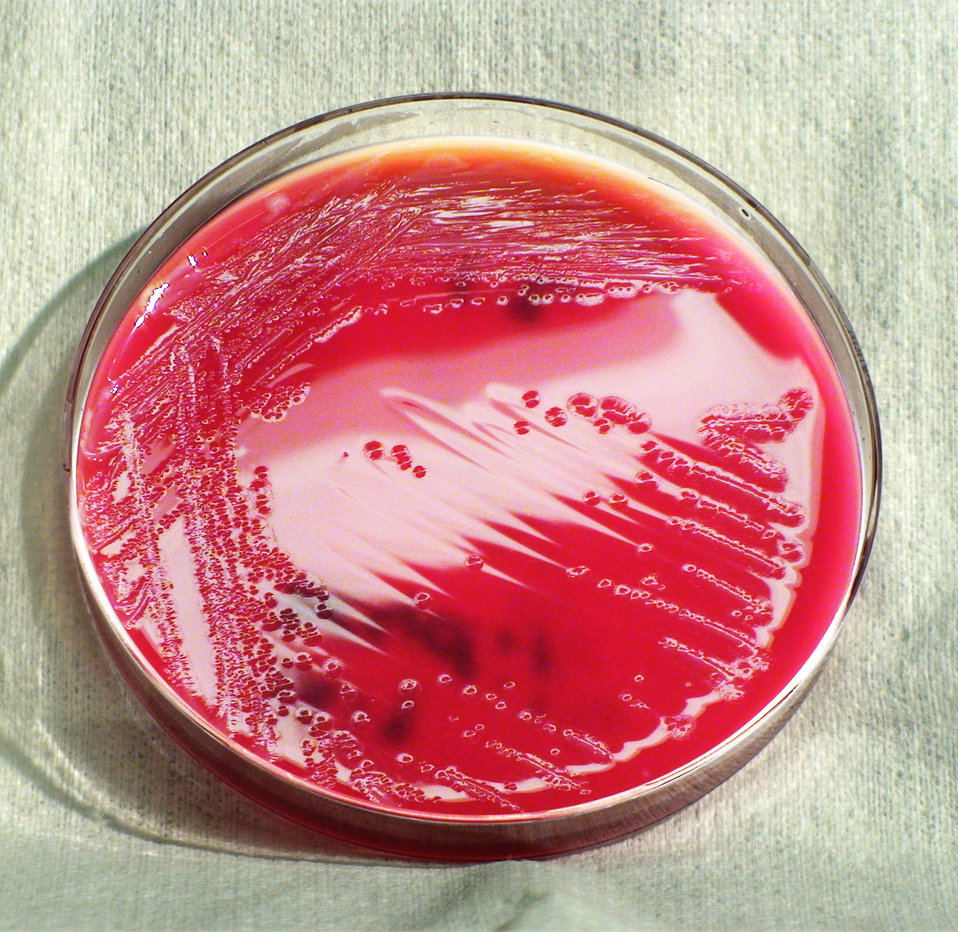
This photograph depicts the colonial morphology displayed by Gram-negative Shigella boydii bacteria, which was grown on a medium of sheep's blood agar (SBA), for a 24 hour time period, at a temperature of 37�C. Shigella spp. bacteria are pathogenic towards humans, and cause an illness known as shigellosis.